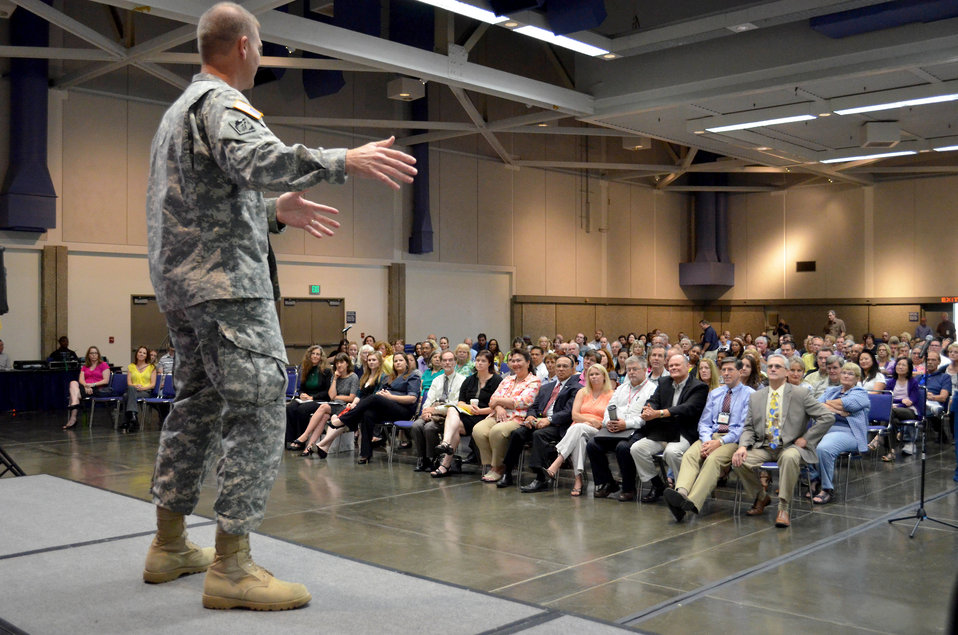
Col. Farrell speaks to the district

130716-A-QE256-002 – Colonel Michael J. Farrell, U.S. Army Corps of Engineers Sacramento District commander, addresses the district in his first town hall meeting July 16, 2013 in Sacramento, Calif. Farrell spoke about his experience with the Corps of Engineers and explained the direction he wants to see the district go during his time in command.